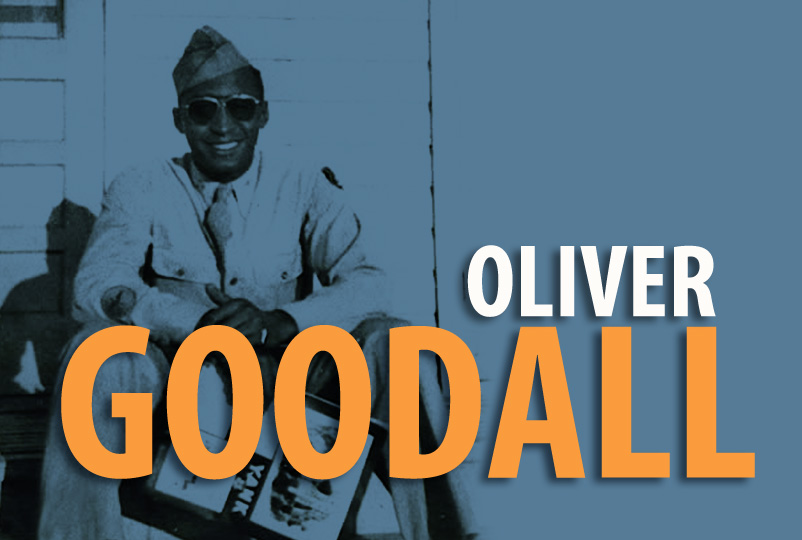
Oliver Goodall